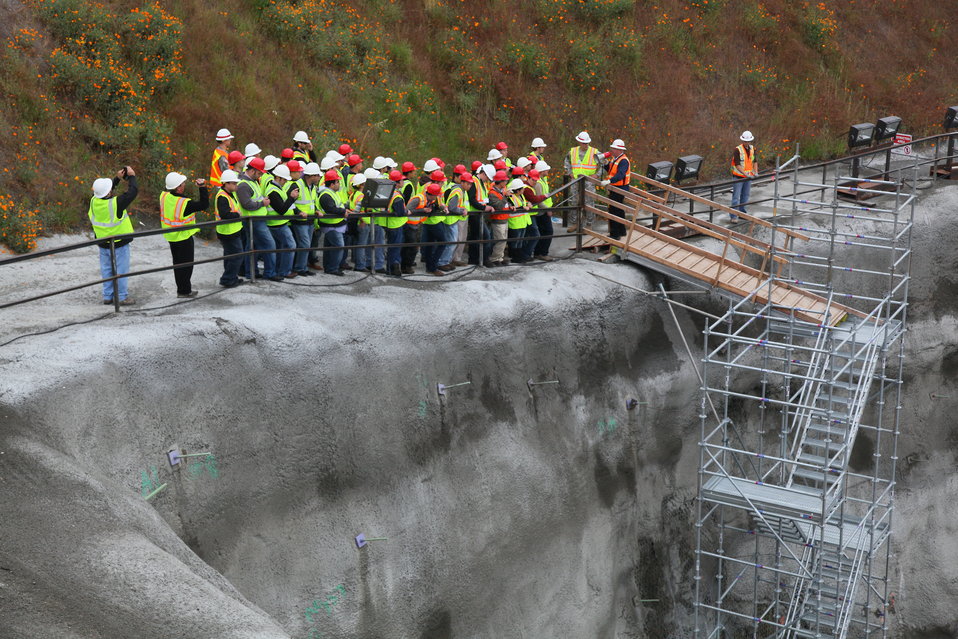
Sacramento State engineering students get a Folsom site tour

Engineering students from California State University-Sacramento took a walking tour with U.S. Army Corps of Engineers Sacramento District personnel at Folsom Lake in Folsom, Calif., April 25, 2012. Corps personnel from the Folsom Dam Joint Federal Project provided a tour of the construction site for the auxiliary spillway to the future engineers.